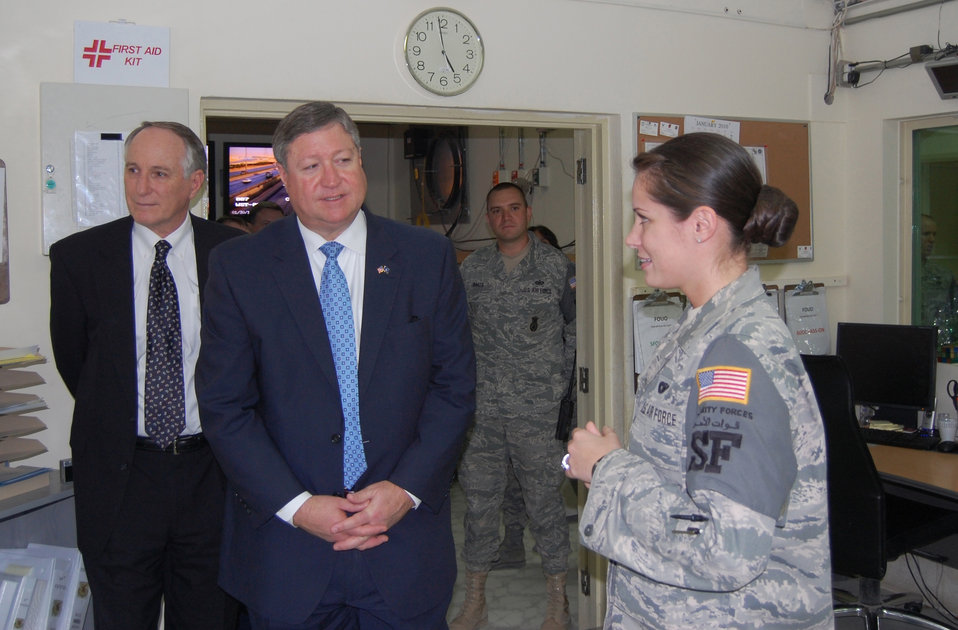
Secretary visits Southwest Asia, outlines Air Force priorities

Staff Sgt. Jamie James briefs Secretary of the Air Force Michael Donley and Terry Marlow on the Base Defense Operations Center Jan. 30, 2010, at a deployed location in Southwest Asia. Sergeant James is from the 64th Expeditionary Security Forces Squadron.